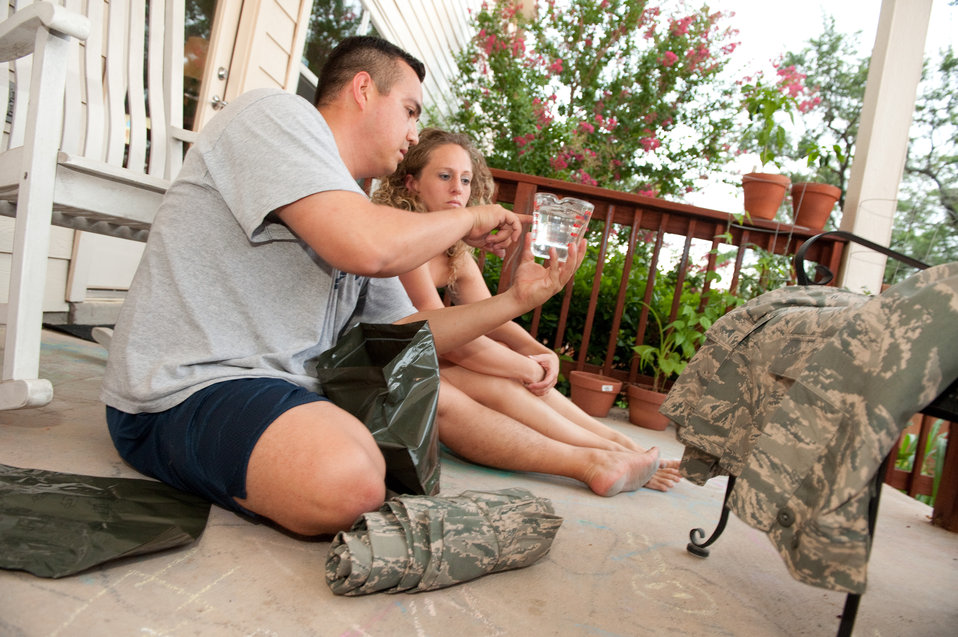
Blogging Couple Deployment preperation

Tech. Sgt. Christina Gamez (right) looks on and learns as her husband Master Sgt. Rudy Gamez checks the amount of water to be added to a bag for a permethrin insect repellent and water treatment at his home in San Antonio, Texas, on July 13, 2010. The bags will be used to soak the blouse and pants of a uniform set in a repellent and water emulsion, providing some protection for many washings. He is preparing for Combat Skills Training and his sixth deployment to Southwest Asia, and Tech. Sgt Gamez will be on her first deployment. Later this year he and his wife Tech. Sgt Christina Gamez will both blog about their deployment experiences.